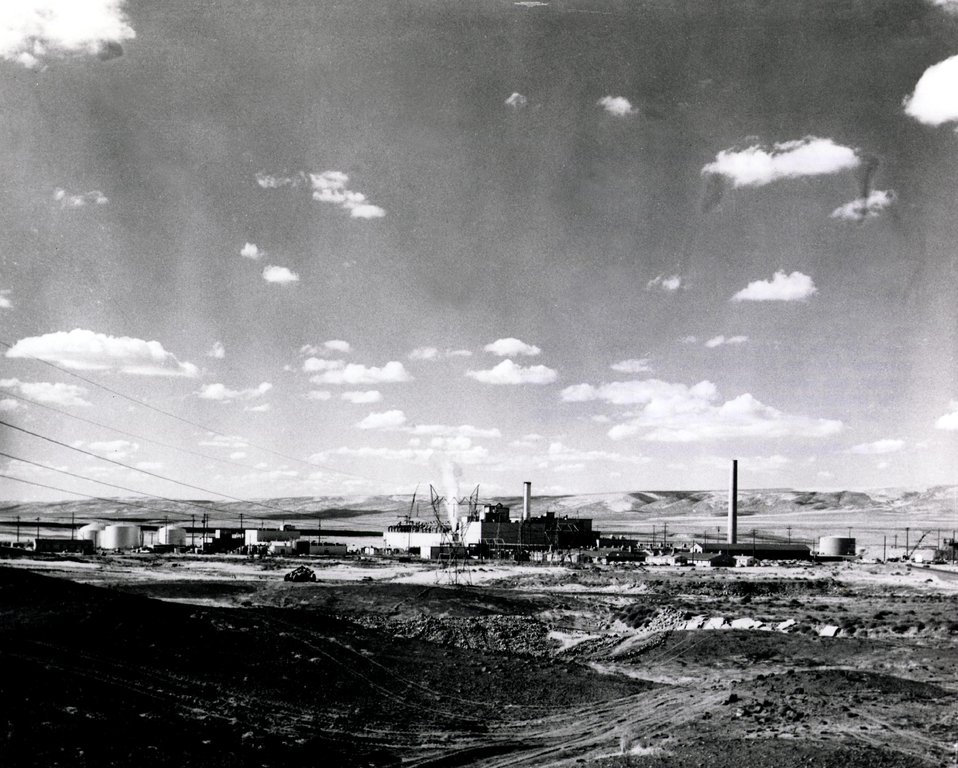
Hanford's N-Reactor due to go critical before the end of the year.